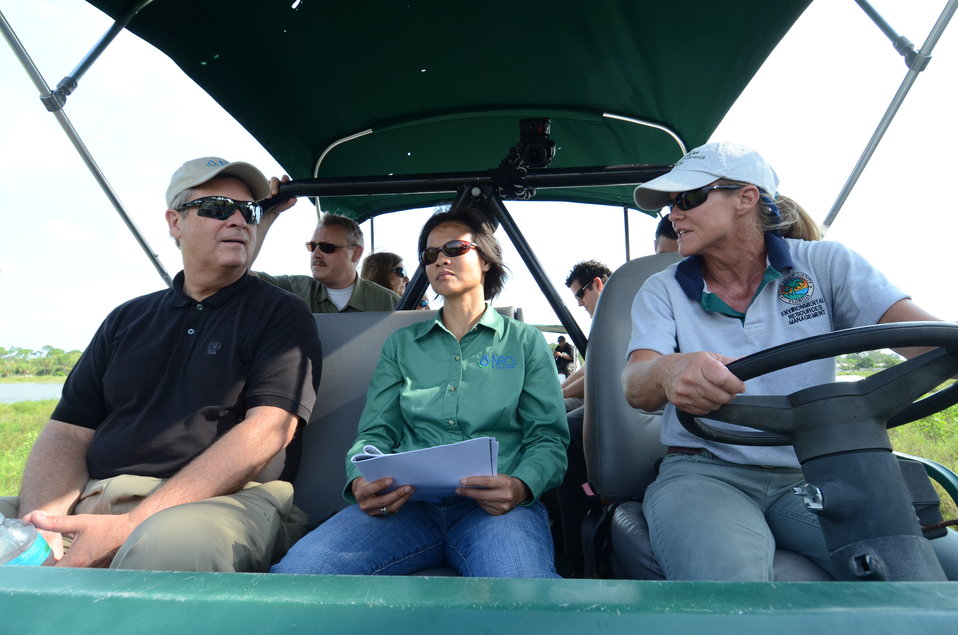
Agriculture Secretary Tom Vilsack rides along with USDA, National Resources Conservation Service Nga Watts and Palm Beach County Board of County Commissioners, Department of Environmental Resource Management, Natural Resources Stewardship Environmental Program Supervisor Brenda Hovde (driving) to see the Winding Waters Natural Area, FL, on Thursday, August 8, 2011.